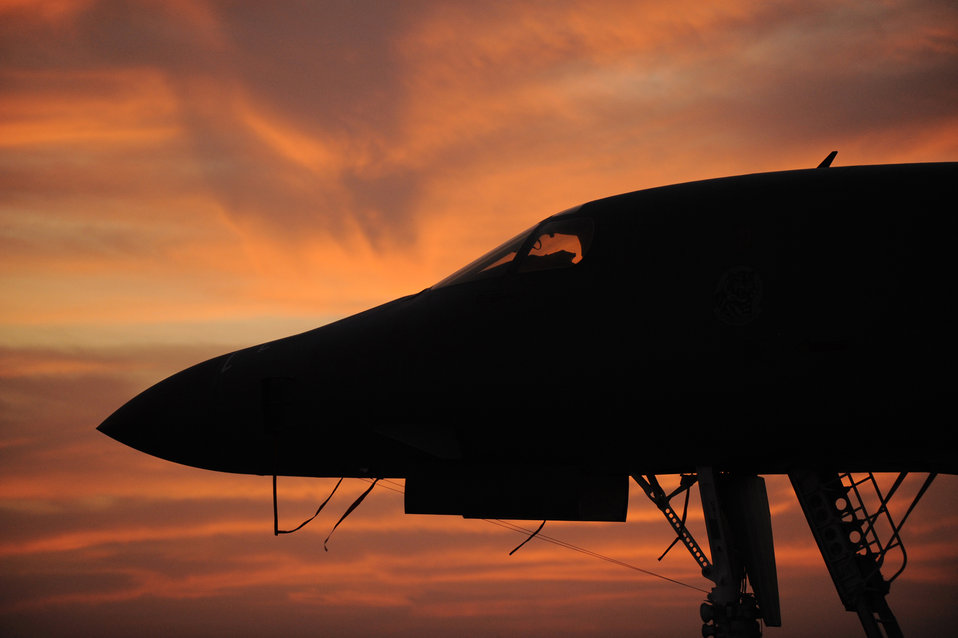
B-1B Lancer assigned to the 37th Expeditionary Bomb Squadron

A B-1B Lancer assigned to the 37th Expeditionary Bomb Squadron waits on the flightline Jan. 23, 2010, in Southwest Asia. The 37th EBS is being replaced by the 34th EBS, both squadrons are from Ellsworth Air Force Base, S.D.